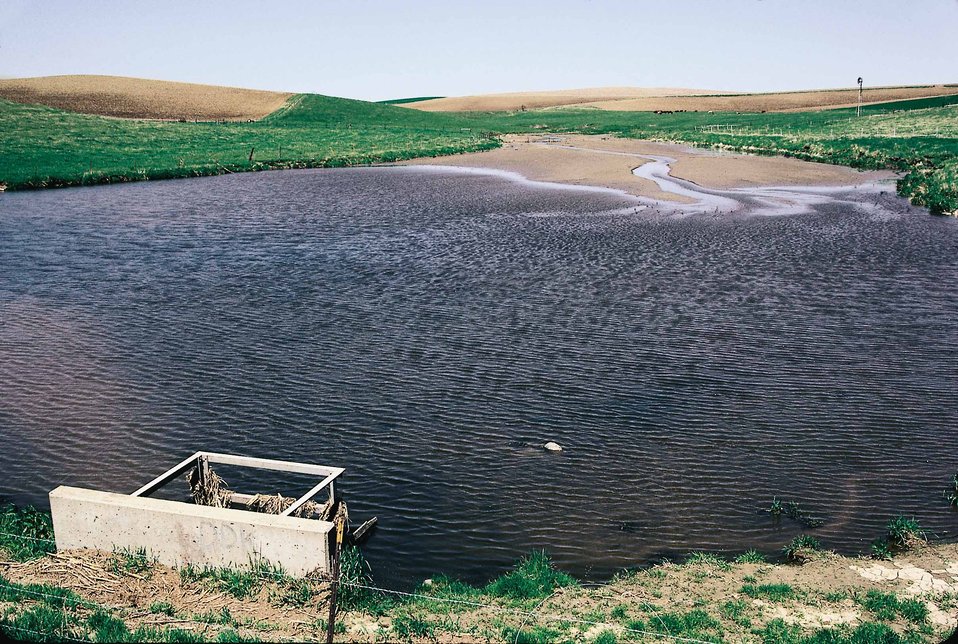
Sediment in this watershed reservoir in northwest Iowa is diminishing its capacity to temporarily store floodwaters. The entire upper portion of the water body is filled with sediment.